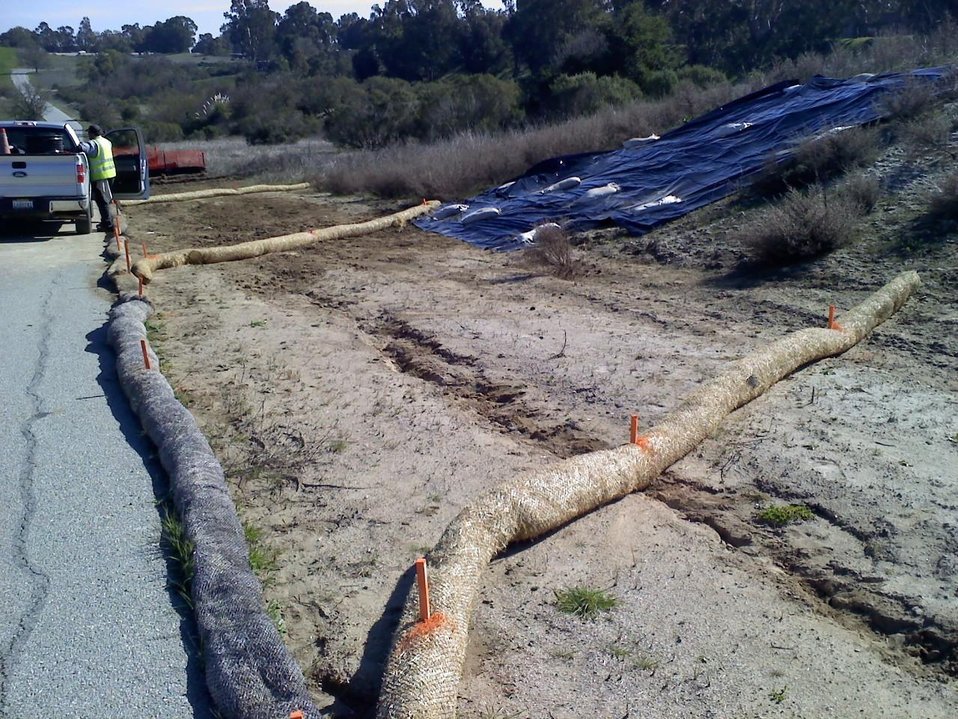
Recovery Act Supports Soil and Debris Cleanup, Groundwater Treatment at SLAC

Recovery Act workers are on track to remove more than 30,000 cubic yards of contaminated soil and debris at the SLAC National Accelerator Laboratory by September 2011.
The Recovery Act invested $14.3 million in legacy cleanup activities at SLAC. In addition to removing contaminated soil and debris that is shipped to local disposal facilities, Recovery Act workers installed three new groundwater treatment systems.